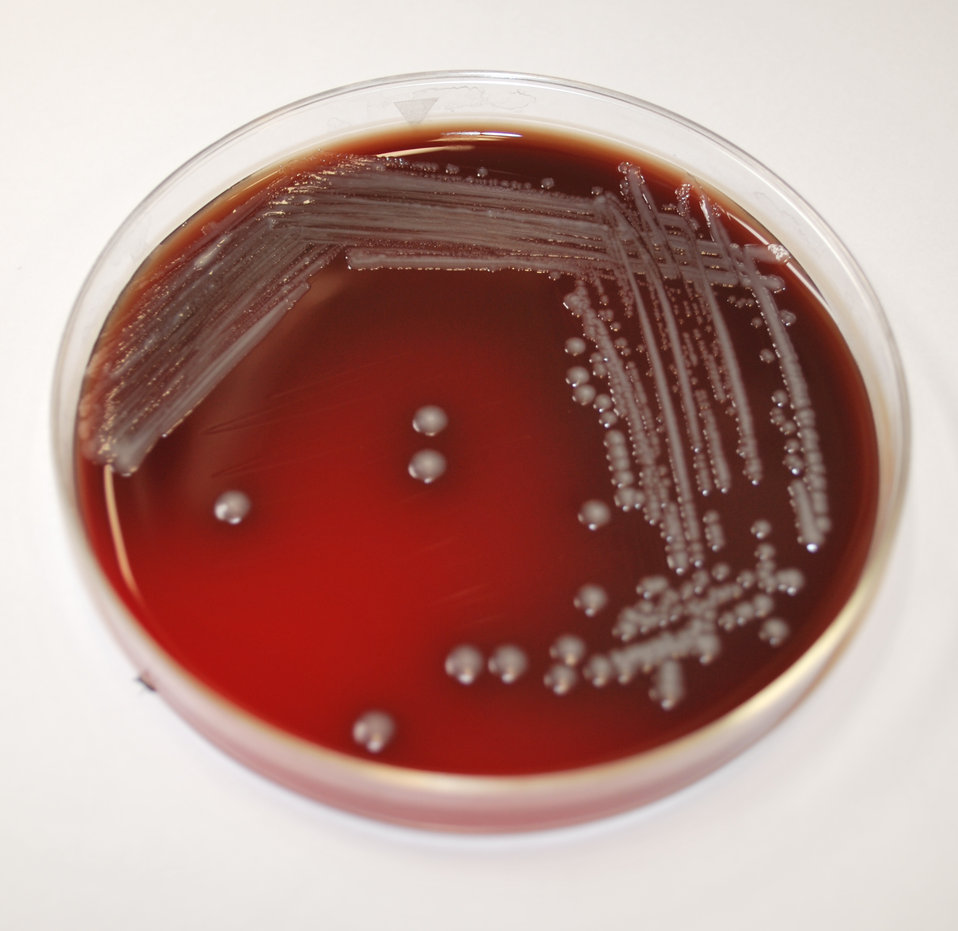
This image depicts a Petri dish containing a sheep's blood agar (SBA) medium, which had been inoculated with Gram-negative Yersinia pestis bacteria. Y. pestis is the pathogen responsible for causing human plague. This was the appearance of the colonial growth after 72 hours of incubation at 37� C.